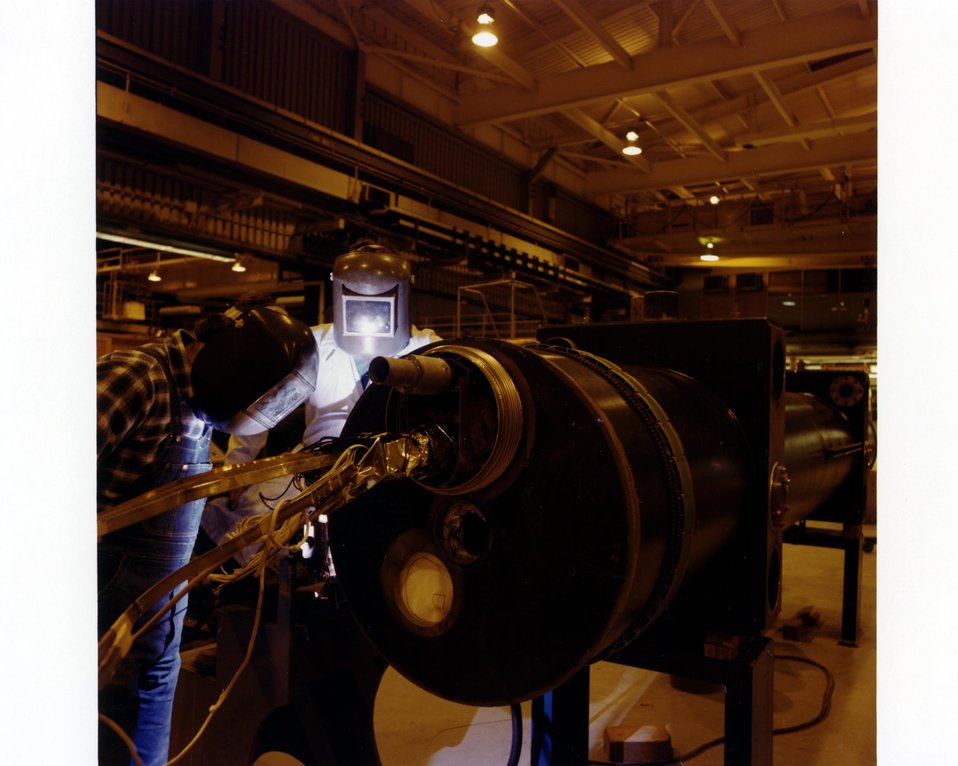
CBA, A PROTON-PROTON COLLIDING BEAM ACCELERATOR TO STUDY THE BASIC STRUCTURE OF ENERGY AND MATTER, IS BEING BUILT ON THE NORTHWEST QUADRANT OF THE 5,250 ACRE BROOKHAVEN SITE. THE FACILITY ITSELF IS AN UNDERGROUND CIRCULAR TUNNEL, WHICH IS 3.8 KILOMETERS IN CIRCUMFERENCE. TWO RINGS OF SUPERCONDUCTING MAGNETS WILL BE INSIDE THE TUNNEL. PROTON BEAMS WILL BE INJECTED INTO THE TUNNEL AND ACCELERATED TO ENERGIES UP TO 400 GEV. AT SIX PLACES ALONG THE TUNNEL, THE BEAMS WILL COLLIDE. EXPERI- MENTAL HALLS, WHICH ENCLOSE THESE SIX INTERSECTINS, WILL HOUSE EQUIPMENT FOR STUDYING THE RESULTS OF THE COLLISIONS.